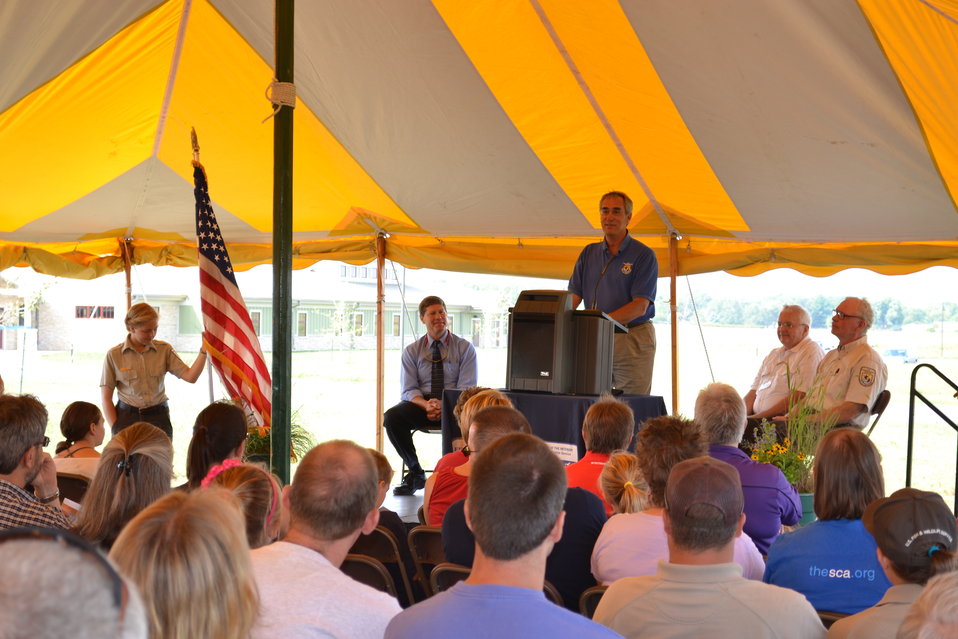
Regional Director Tom Melius

U.S. Fish and Wildlife Service Midwest Regional Director, Tom Melius, addresses the crowd at the grand opening ceremony.